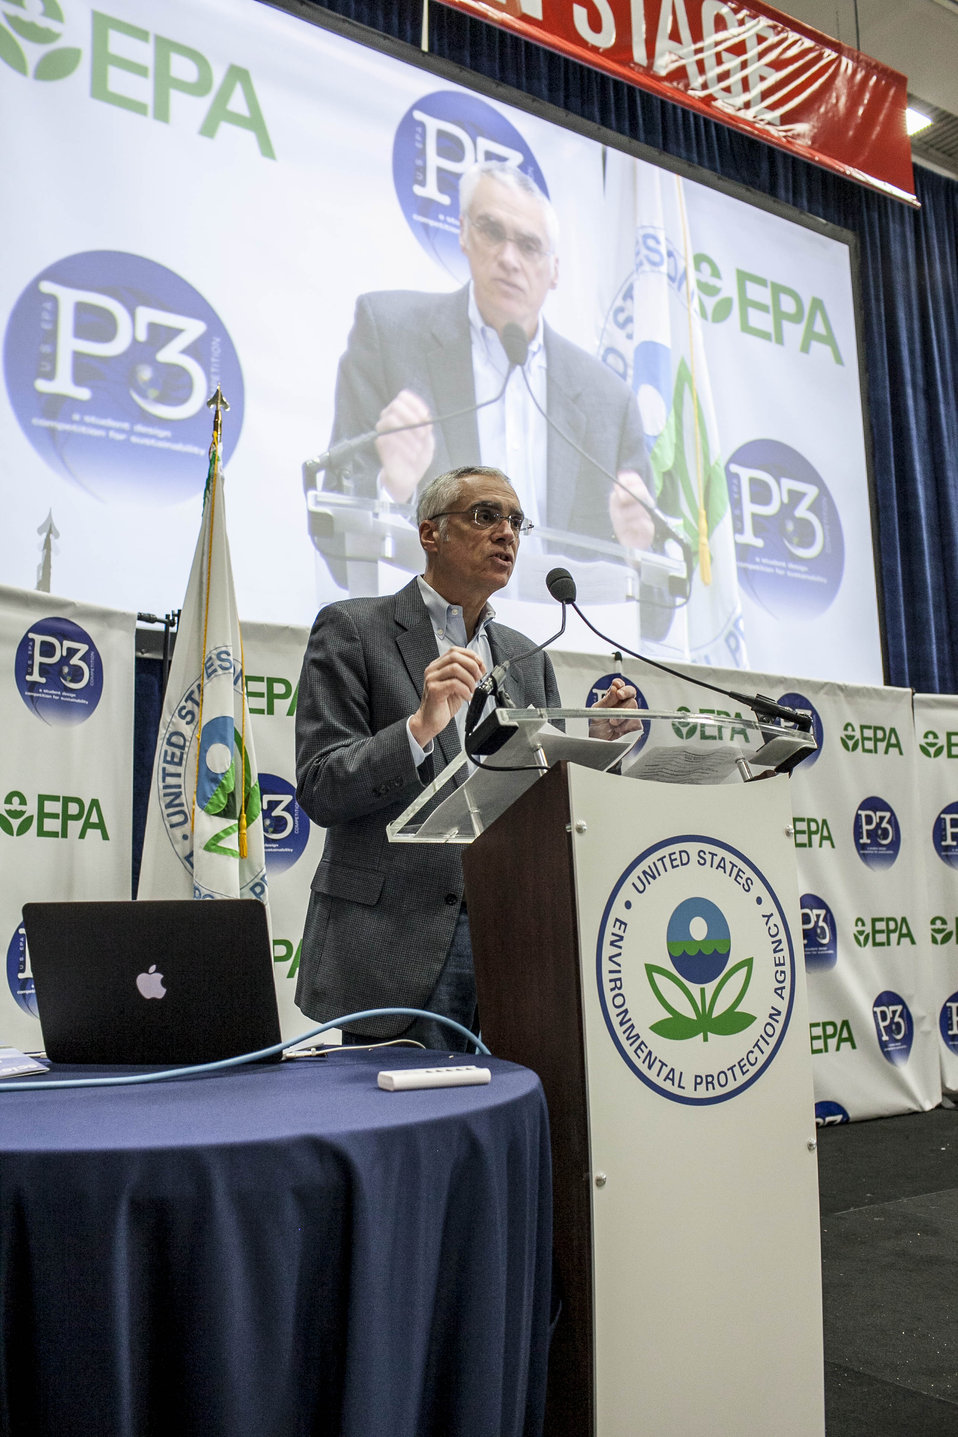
2014 P3 Competition

EPA Deputy Administrator, Bob Perciasepe, congratulates all the competing teams for their outstanding projects.